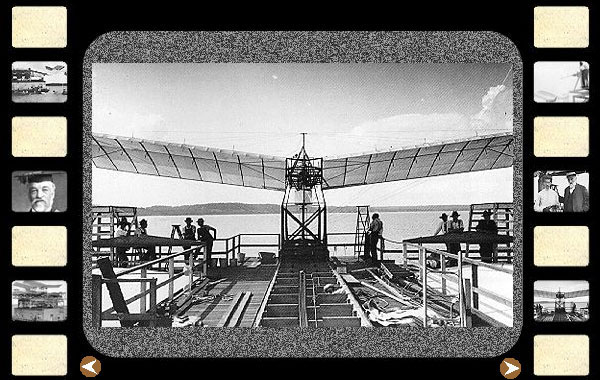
Samuel P. Langley

Early Years -- Samuel P. Langley